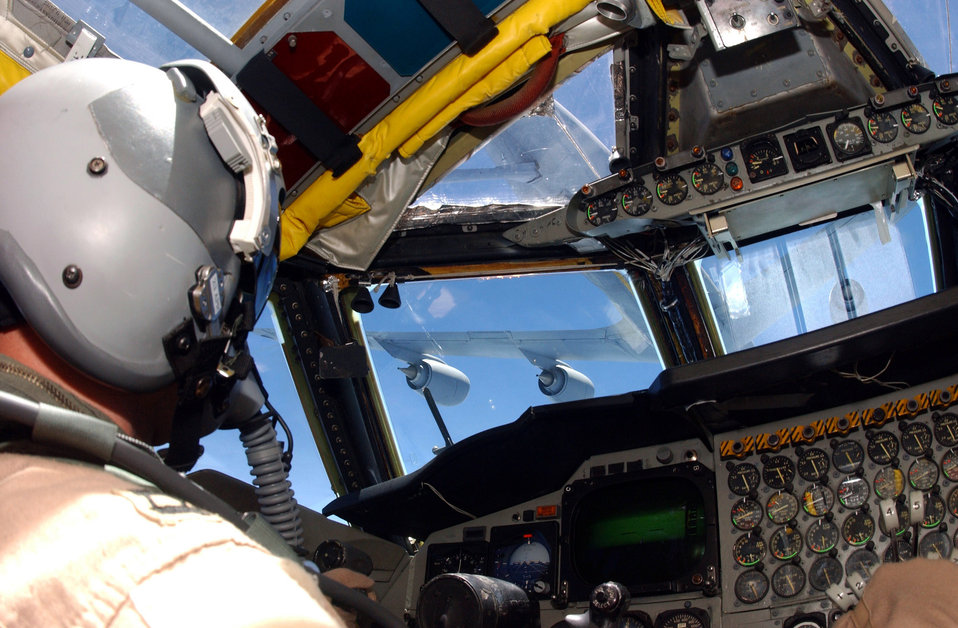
Time to refuel

OPERATION IRAQI FREEDOM -- Capt. Jason McNutt maneuvers his B-52 Stratofortress into position beneath a KC-135 Stratotanker for aerial refueling. The B-52 bomber crew from the 40th Expeditionary Bomb Squadron dropped 45 500-pound bombs on targets in Iraq on April 4.